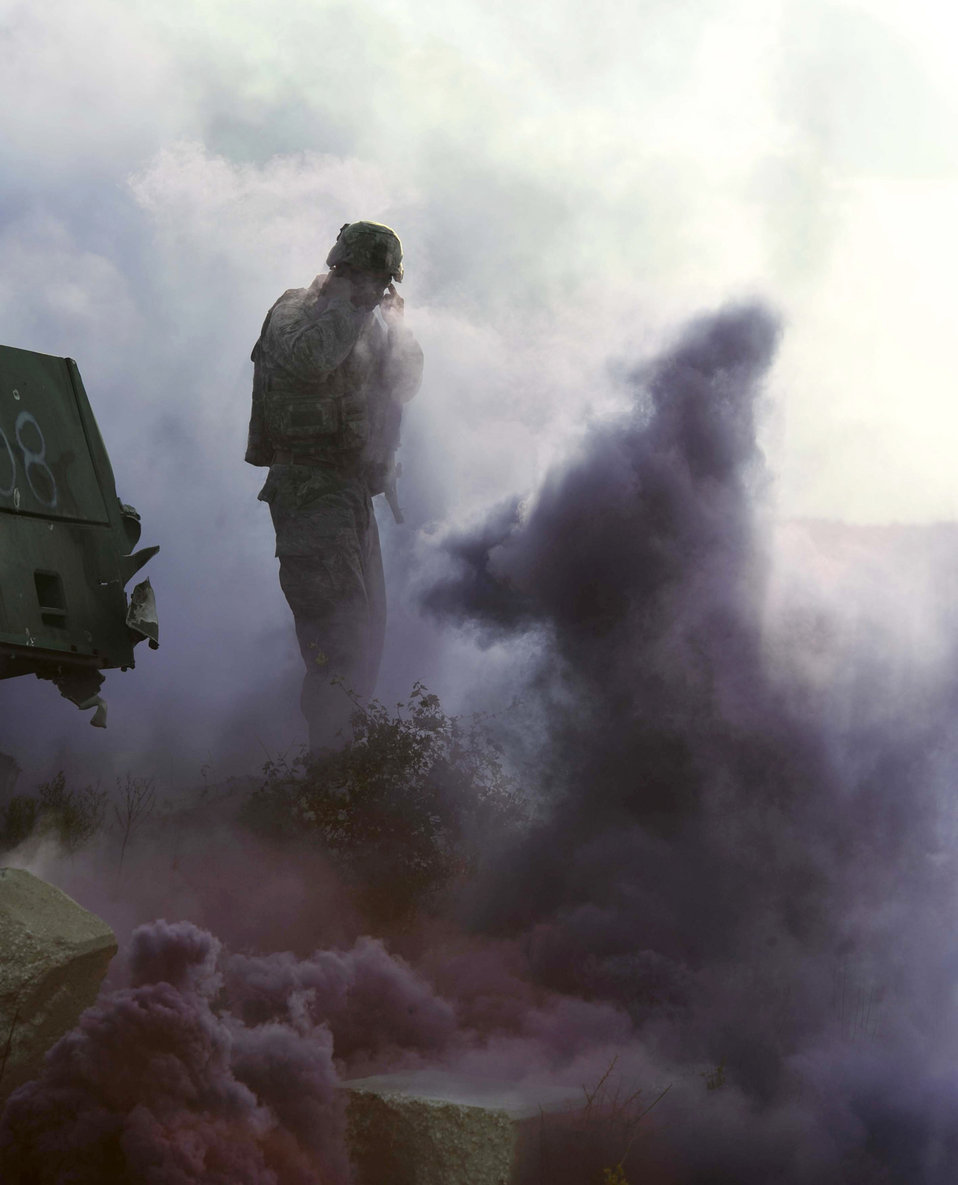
Can you see me?

Team leader Staff Sgt. Michaelson pops smoke at Atlantic Strike 10-02, Sept. 14, 2010, at Avon Park, Fla. Popping smoke is one of the ways a team lead shows a sense of urgency. Atlantic Strike is a biannual Air Combat Command sponsored joint training exercise.